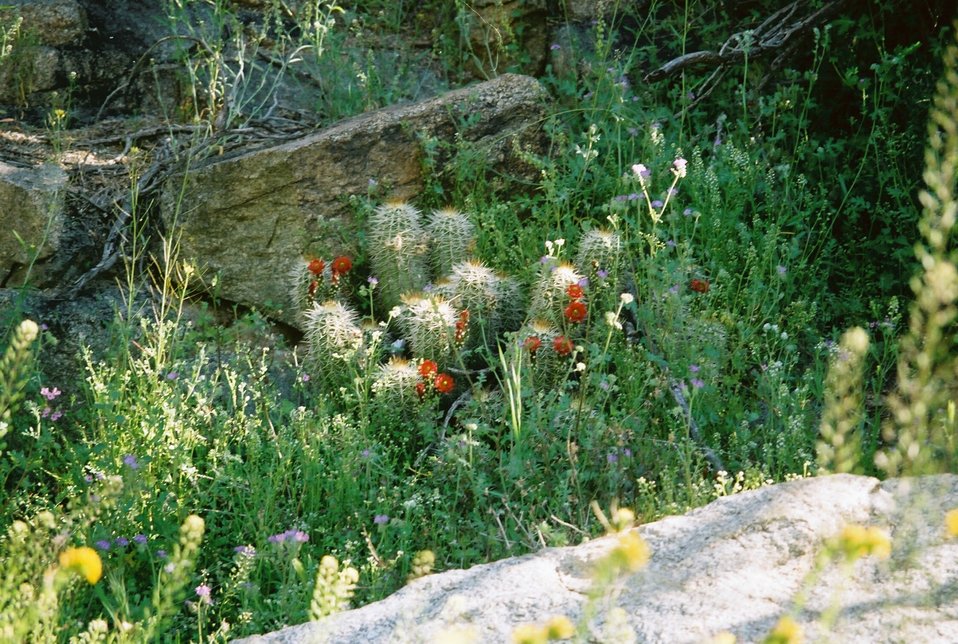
All sorts of wildflowers and cacti grow in the 71,000 acre Agua Fria National Monument.